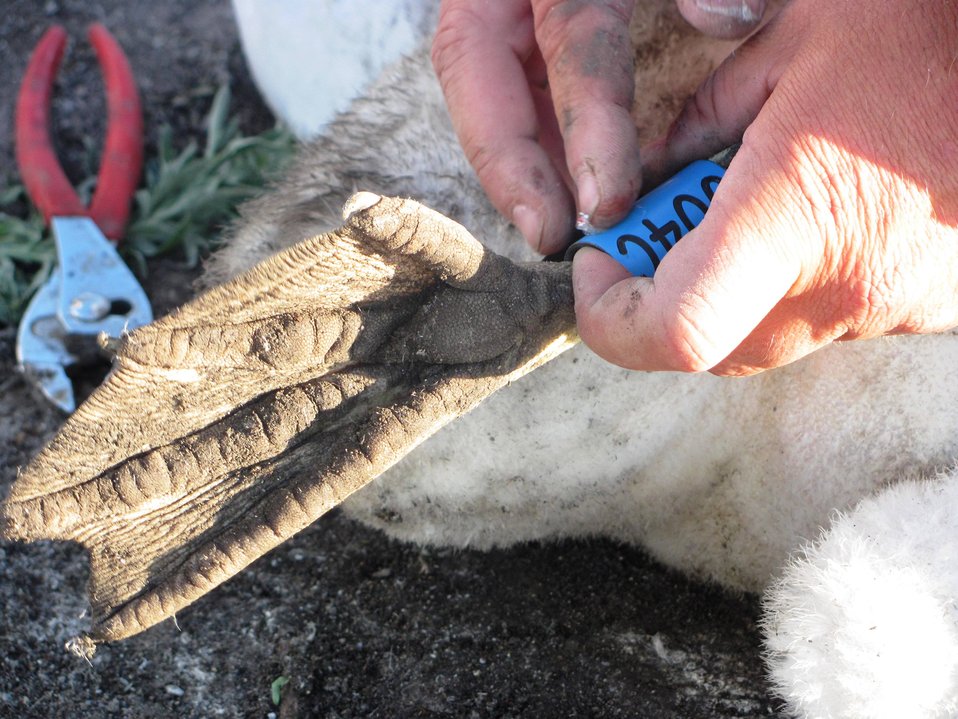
Blue Band

These color bands are placed on juvenile pelicans because they are much easier to re-sight versus a metal band. Both bands provide important life history information such as foraging locations and distribution. The colored bands make it easier to track pelicans to and from wintering grounds, dispersal to other colonies, and approximate age at nesting.